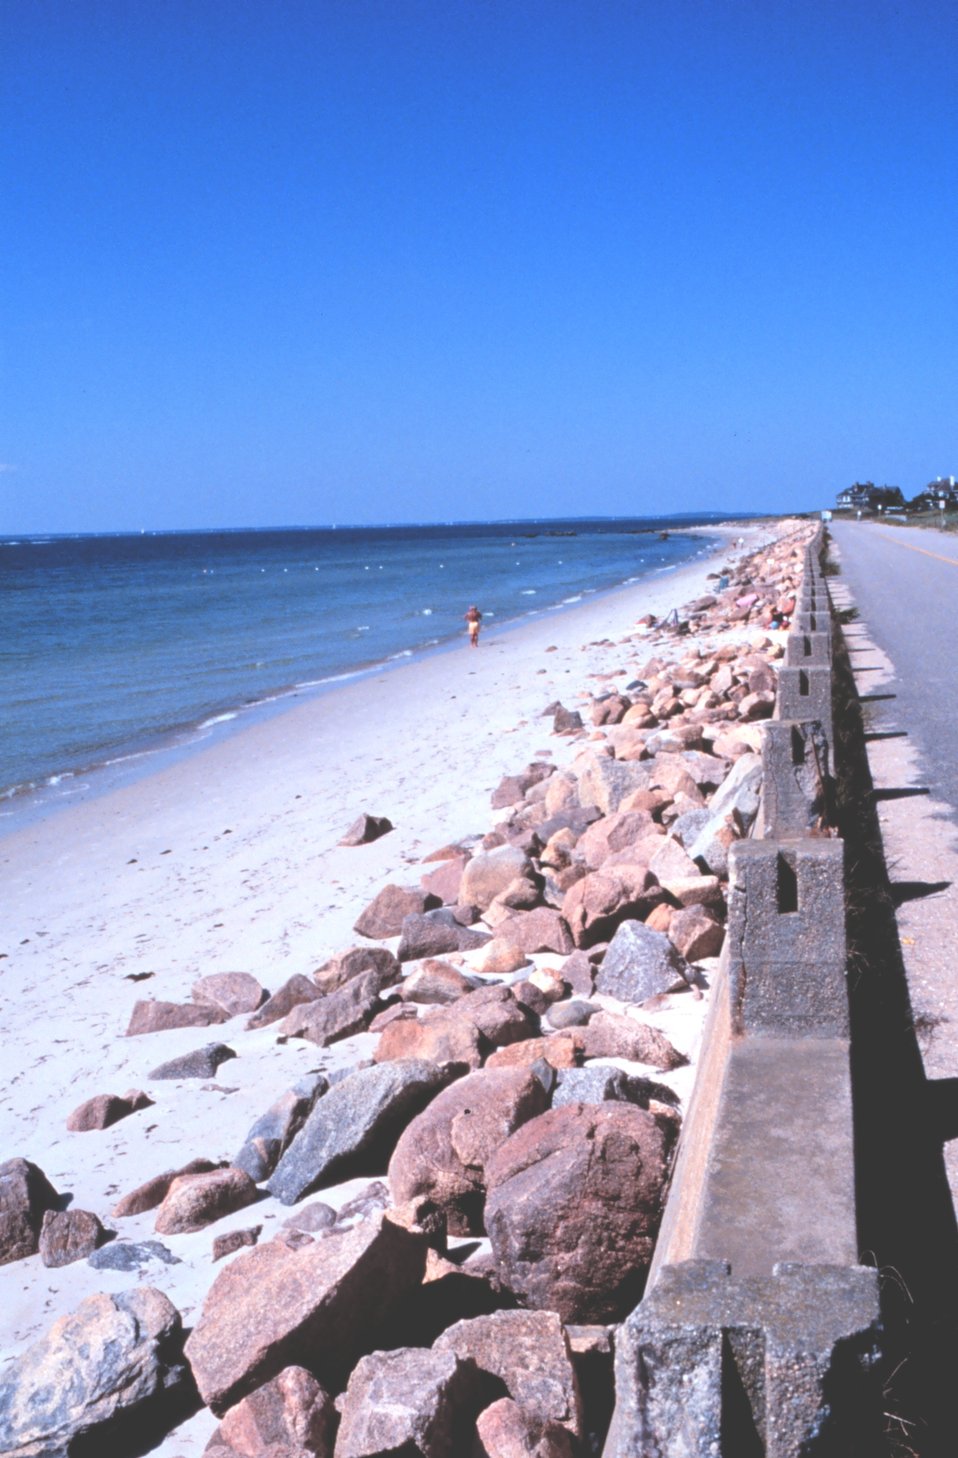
Buzzards Bay/Chapaquoit Beach, West Falmouth